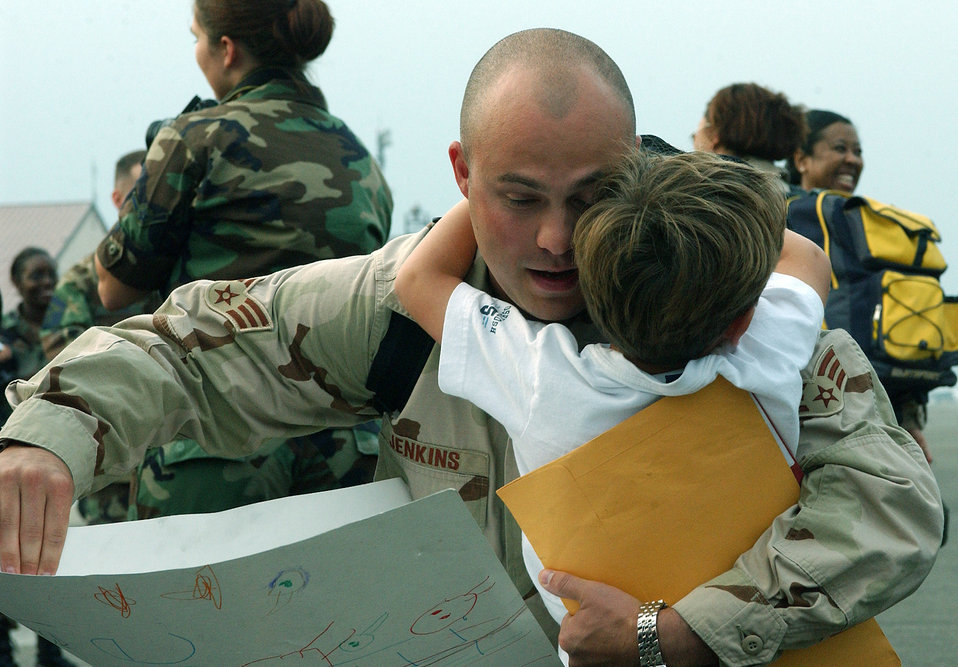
Welcome home!

YOKOTA AIR BASE, Japan -- Senior Airman Frank Jenkins is welcomed home from an Operation Enduring Freedom deployment by his son, Ethan. About 300 people welcomed back nearly 90 deployed Airmen at a Sept. 2 ceremony here. Airman Jenkins is assigned to the 374th Civil Engineer Squadron.